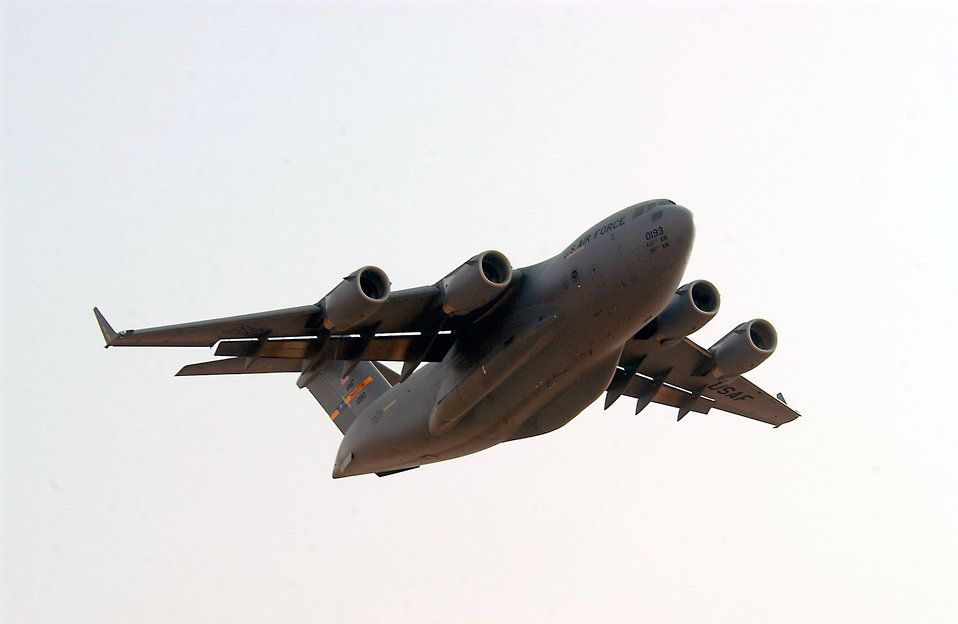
C-17 Globemaster III

OPERATION IRAQI FREEDOM -- A C-17 Globemaster III deployed to the 363rd Air Expeditionary Wing takes off for a mission at a forward-deployed location in Southwest Asia on March 27. Aircraft move around the clock to support Operation Iraqi Freedom.